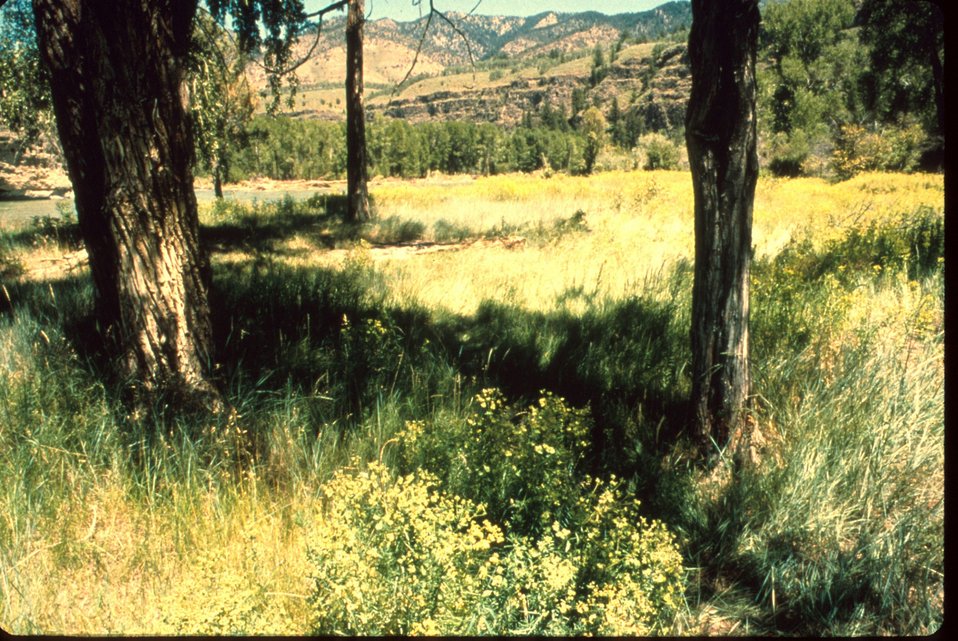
Leafy Spurge noxious weed